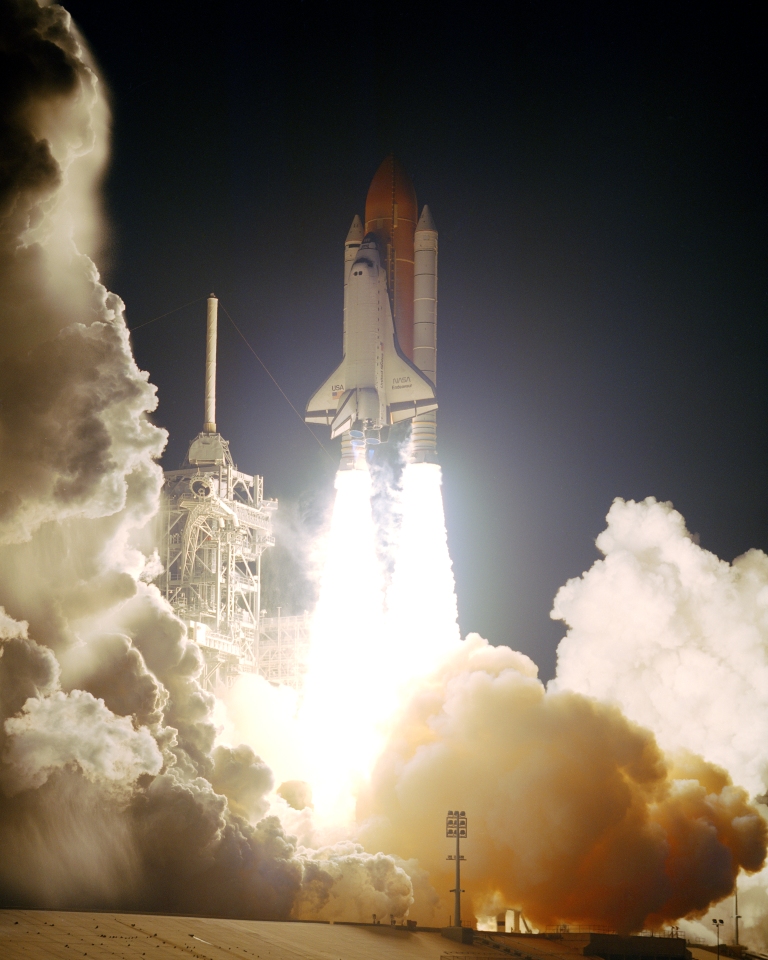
Blogs follow shuttle launch preparations

The space shuttle Endeavor is set to launch April 29 at 3:47 p.m. EDT. Members of the 45th Space Wing at Patrick Air Force Base, Fla., are involved with launch preparations which are showcased in blog entries linked on AF.mil.